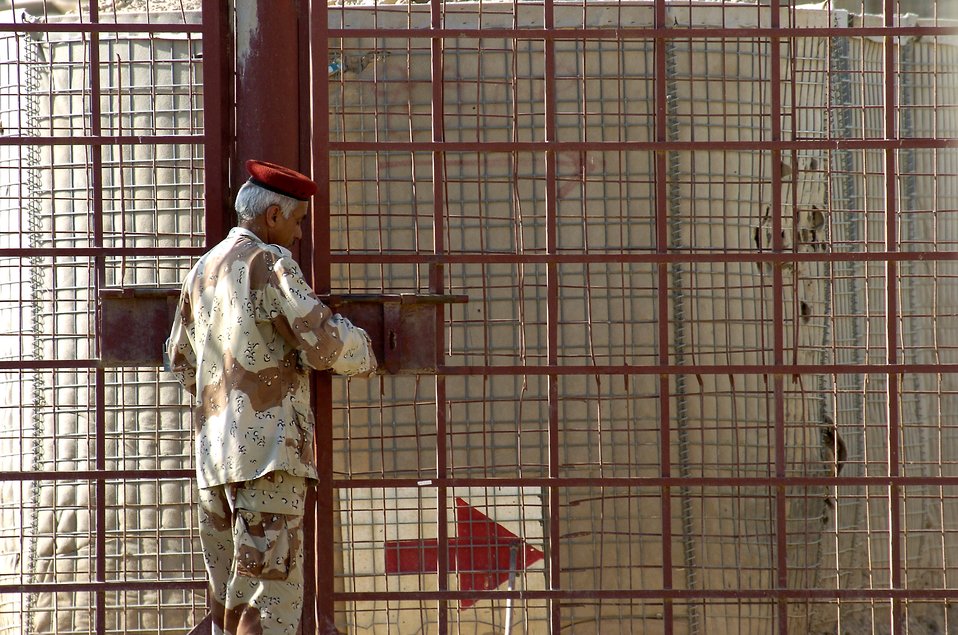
Airmen train Iraqi soldiers on base defense

An Iraqi soldier locks the gate at Ar Rasheed Base, Iraq, on Thursday, May 25, 2006. The soldier is with the 1st Iraqi Army Division/Iraqi Intervention Forces, which provide defense for the compound. Five security forces Airmen and their Army commander live on the base and advise the Iraqi Army on base defense procedures.